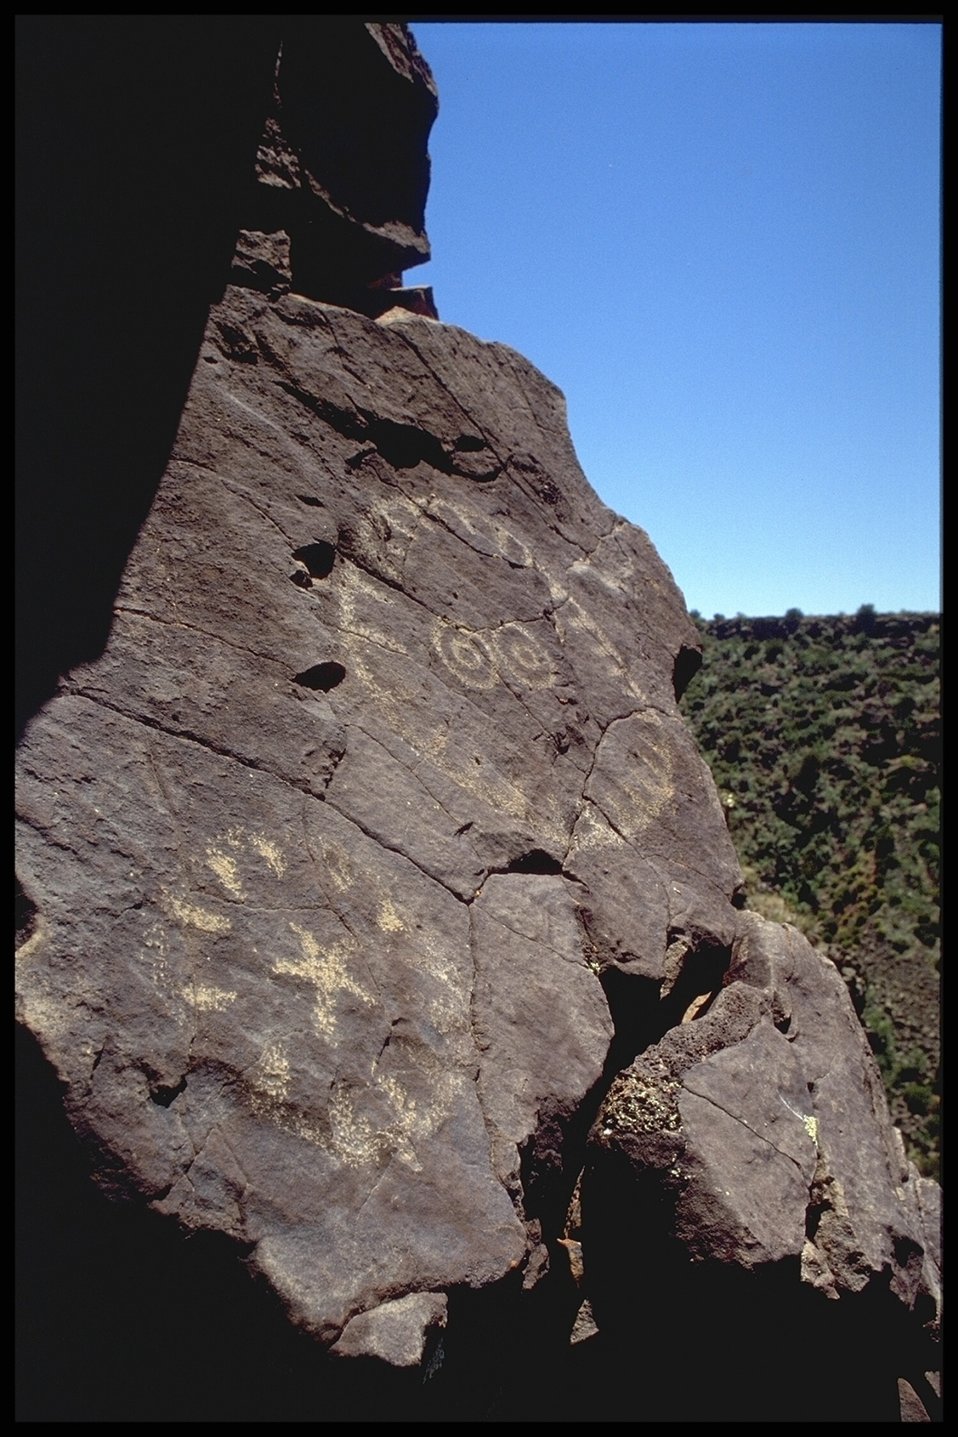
A Petroglyph (Rock Art) is shown with the blue Arizona sky hanging over the 71,000 acre Agua Fria National Monument in the Background.